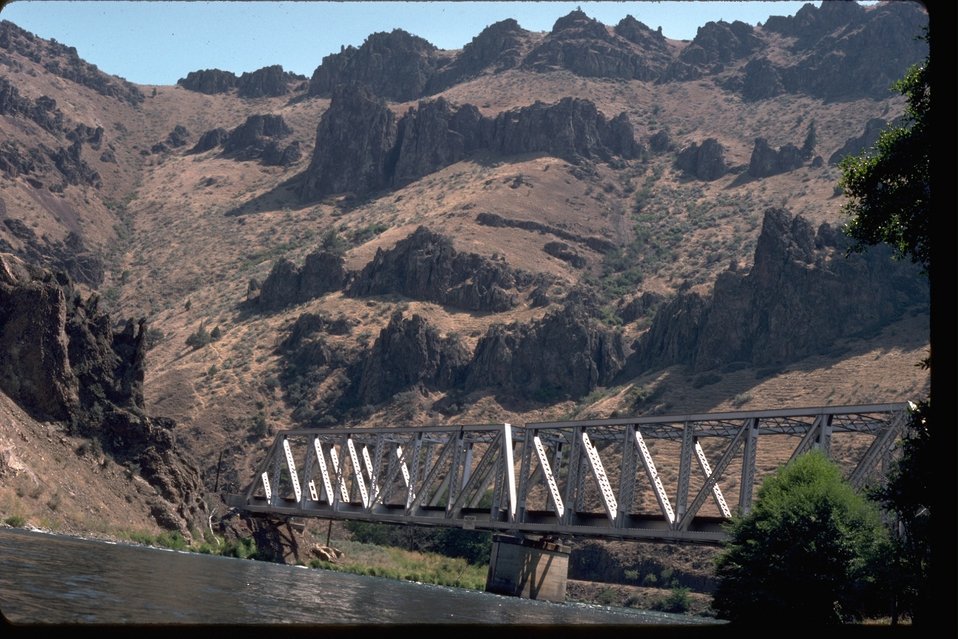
Bridge at the North Junction of the Lower Deschutes River.